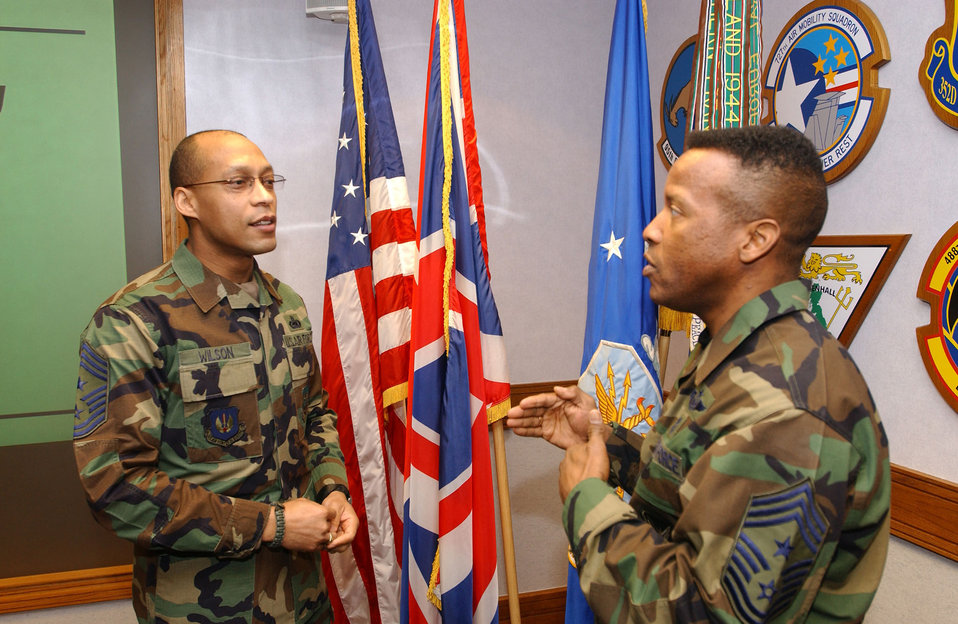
Chiefs found opportunities in Air Force

ROYAL AIR FORCE MILDENHALL, England (AFPN) -- Chief Master Sgt. Angelo Wilson talks with Chief Master Sgt. Jeffrey Richardson before the wing stand-up meeting Feb. 1. Chiefs Wilson and Richardson came from different backgrounds, but both saw the opportunities the Air Force provided. Chief Wilson is the command chief master sergeant for the 100th Air Refueling Wing. Chief Richardson is the command chief master sergeant for the 352nd Special Operations Group.